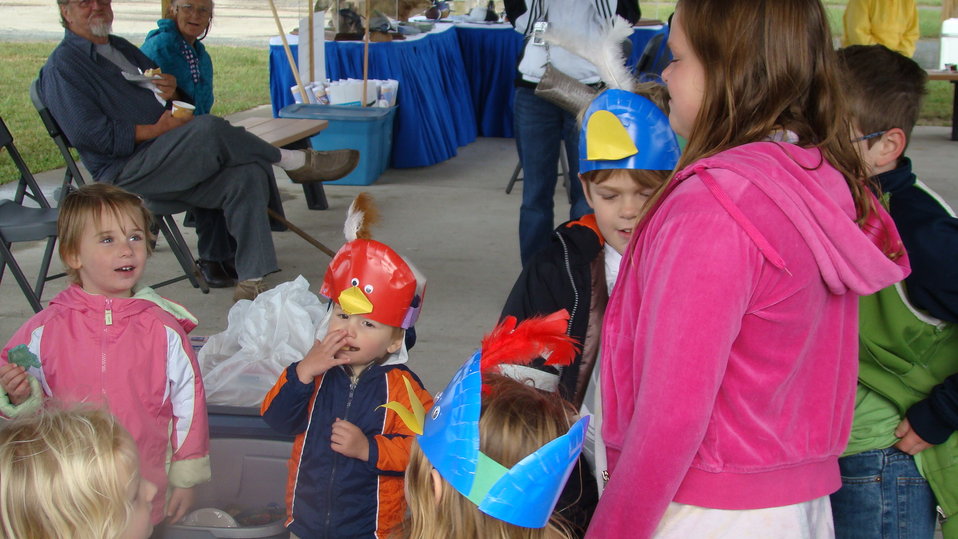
Rappahannock River Valley NWR 15th Anniversary

The Refuge hosted a youth calling contest at the 'Go Wild!' celebration.